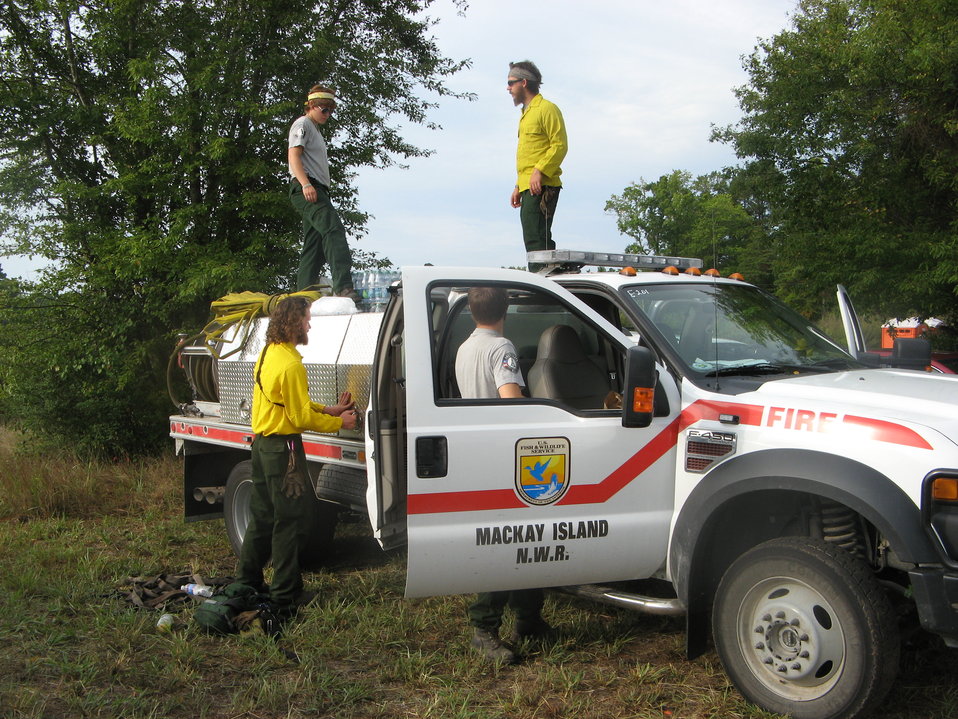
AmeriCorps NCCC prepares Mackay Island engine

Suffolk, VA, August 2011: Members of the Phoenix 3 AmeriCorps National Civilian Community Corps get the Mackay Island National Wildlife Refuge engine ready for fighting the Lateral West Fire on Great Dismal Swamp Naitonal Wildlife Refuge.